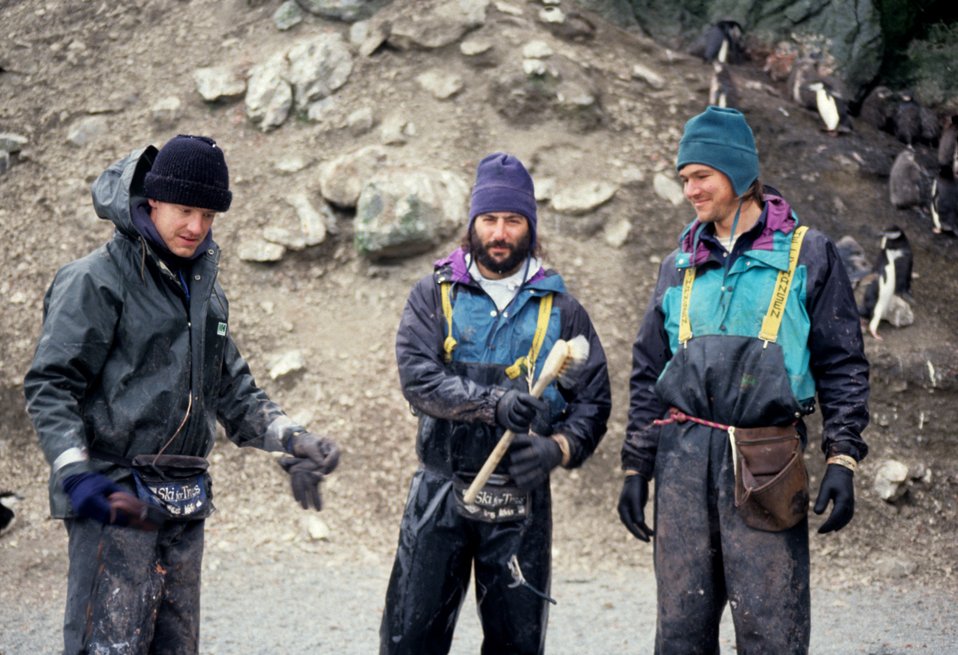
Biologists Brian Walker, Mike Schwartz and William Meyer prepare to weigh penguin chicks, Seal Island.